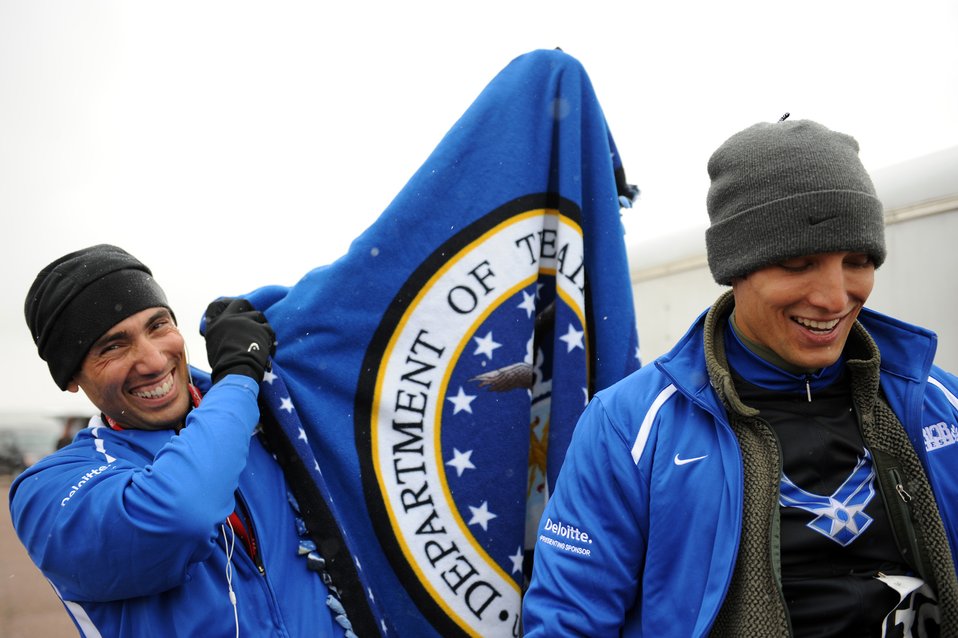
Warrior Games AF Cycling

Staff Sgt. Marc Esposito and Adam Tanverdi show their Air Force spirit before competing in the 20-kilometer upright bike race for the inaugural Warrior Games May 13, 2010, at the U.S. Air Force Academy in Colorado Springs, Colo.